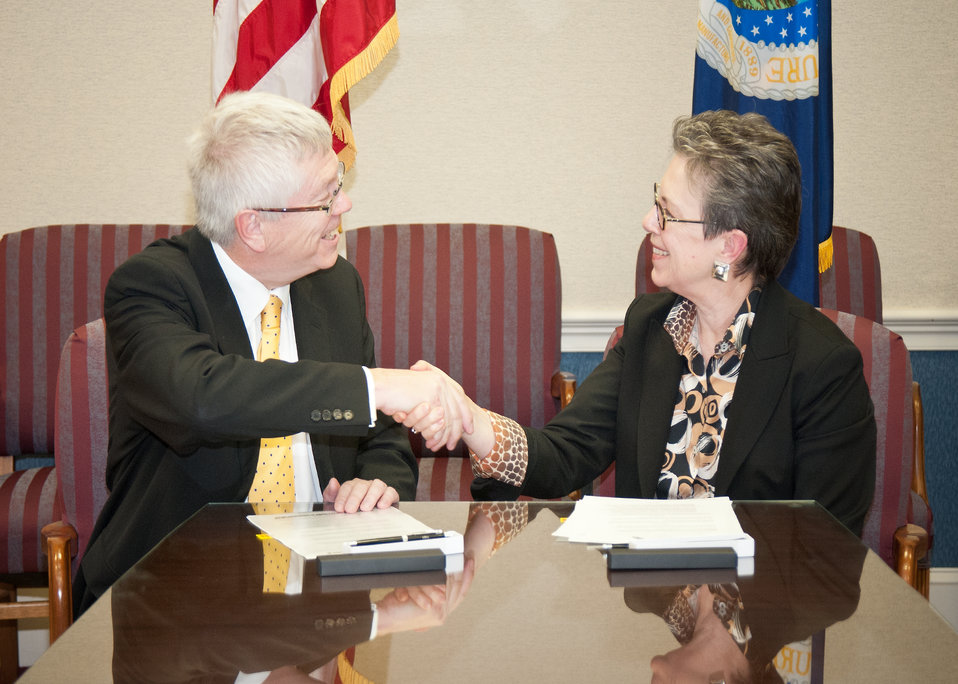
Trevor Nichols (left), Chief Executive Officer, Centre for Agricultural Bioscience CABI-Plantwise and Dr. Catherine Woteki (right), Undersecretary, Research Education and Economics signed a Memorandum of Understanding to make the United States Department of Agriculture’s research and genetic information accessible to “plant doctors” working to prevent disease and pests in developing countries at the United States Department of Agriculture in Washington, D.C., on Tuesday, February 7, 2012. In collaboration with local organizations, Plantwise has formed a network of 182 “plant clinics” in 16 countries around the world. Through the USDA-Plantwise partnership, the “plant doctors” at these clinics will have easier access to USDA research and education in order to help farmers in developing countries diagnose and control the plant pests and diseases affecting their fields.